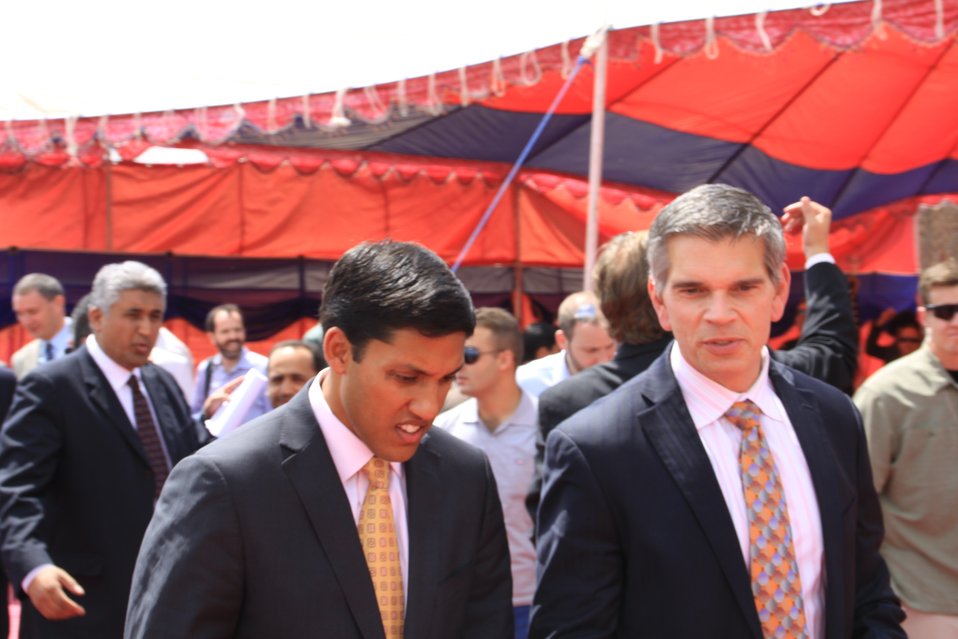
Badam Bagh Farm